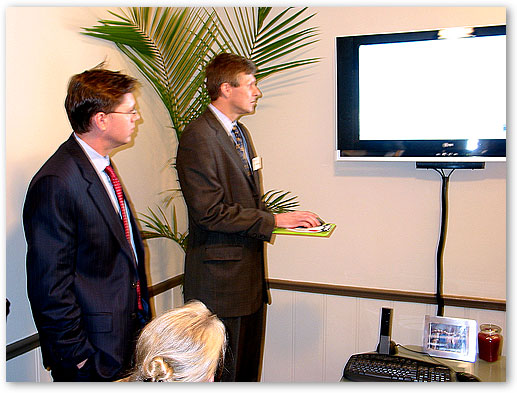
Chairman Martin participates in CURRENT Communications Broadband Over Powerline demonstration in Dallas, Texas.